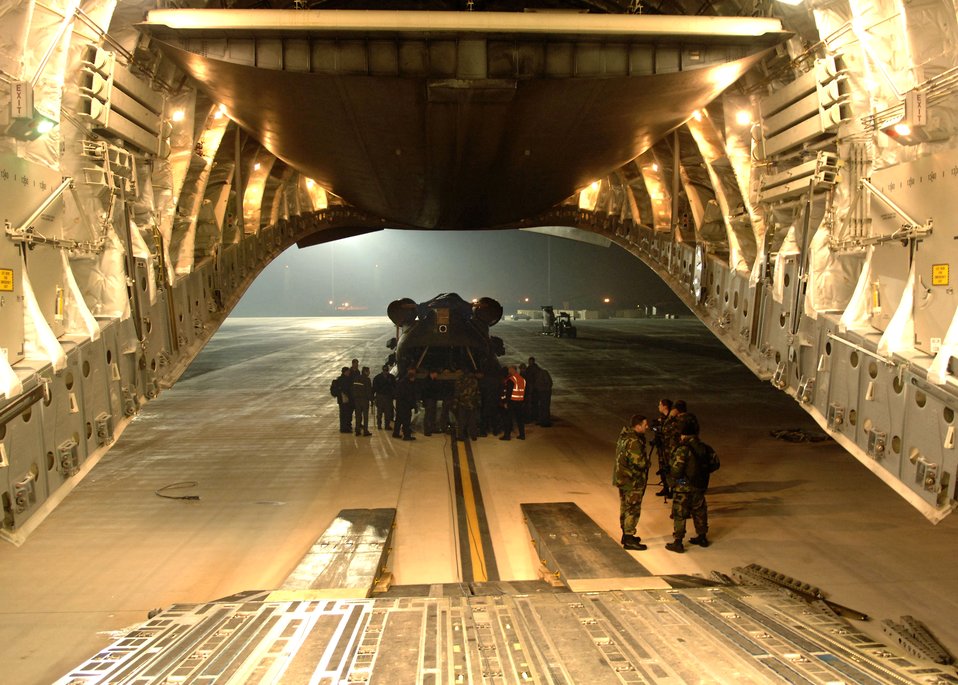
C-17 carries Chinook

NAVAL STATION ROTA, Spain (AFPN) -- An Army CH-47 Chinook helicopter is loaded onto a C-17 Globemaster III Feb. 13. The Chinook was initially offloaded from the U.S.S. Pililaau here.